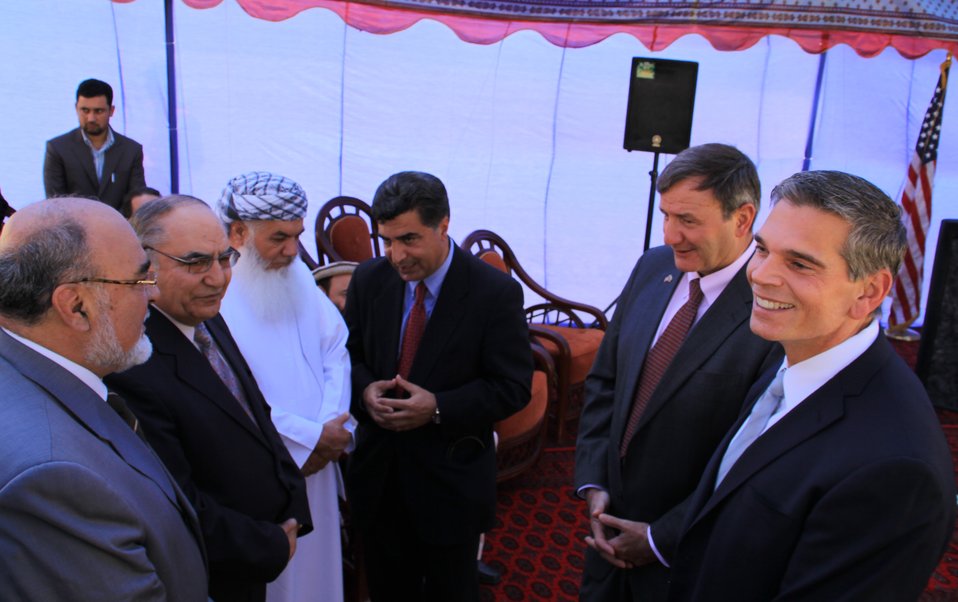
105 MW Tarakhil Power Plant Handover